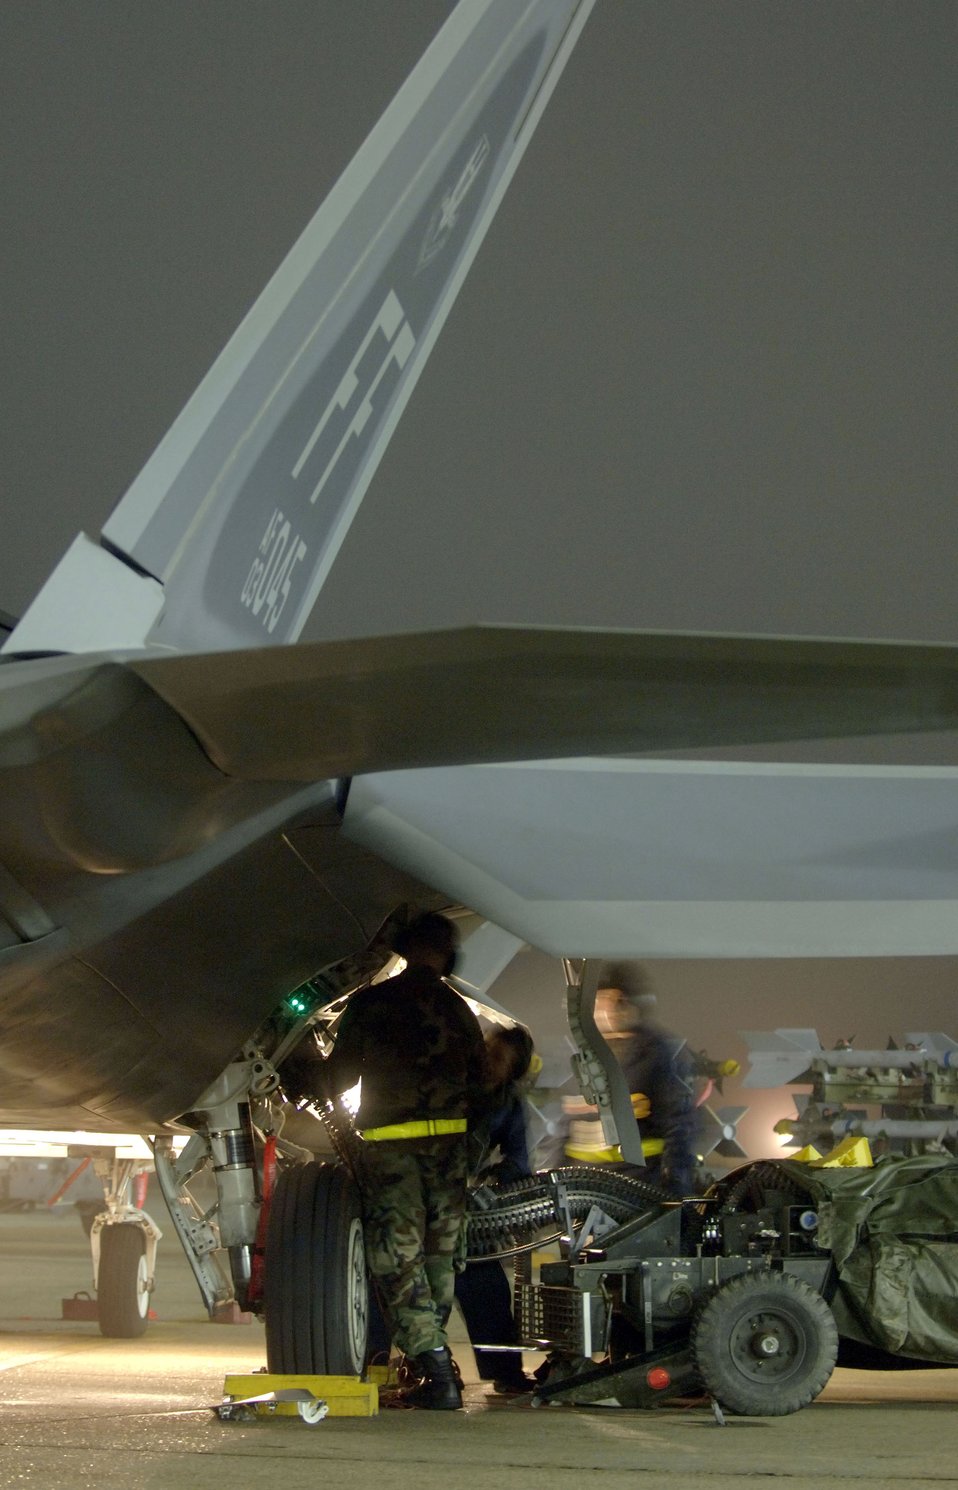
Phase 1 ORE

LANGLEY AIR FORCE BASE, Va. (AFPN) -- A weapons load team from the 27th Aircraft Maintenance Unit loads 20mm rounds on an F-22A Raptor during a Phase 1 operational readiness exercise here Jan. 31. Weapons loaders are practicing load configurations to assess the time it takes to fully load the aircraft. The Phase 1 ORE is an evaluation of the base's ability to prepare and deploy personnel, equipment and support assets to a combat environment.